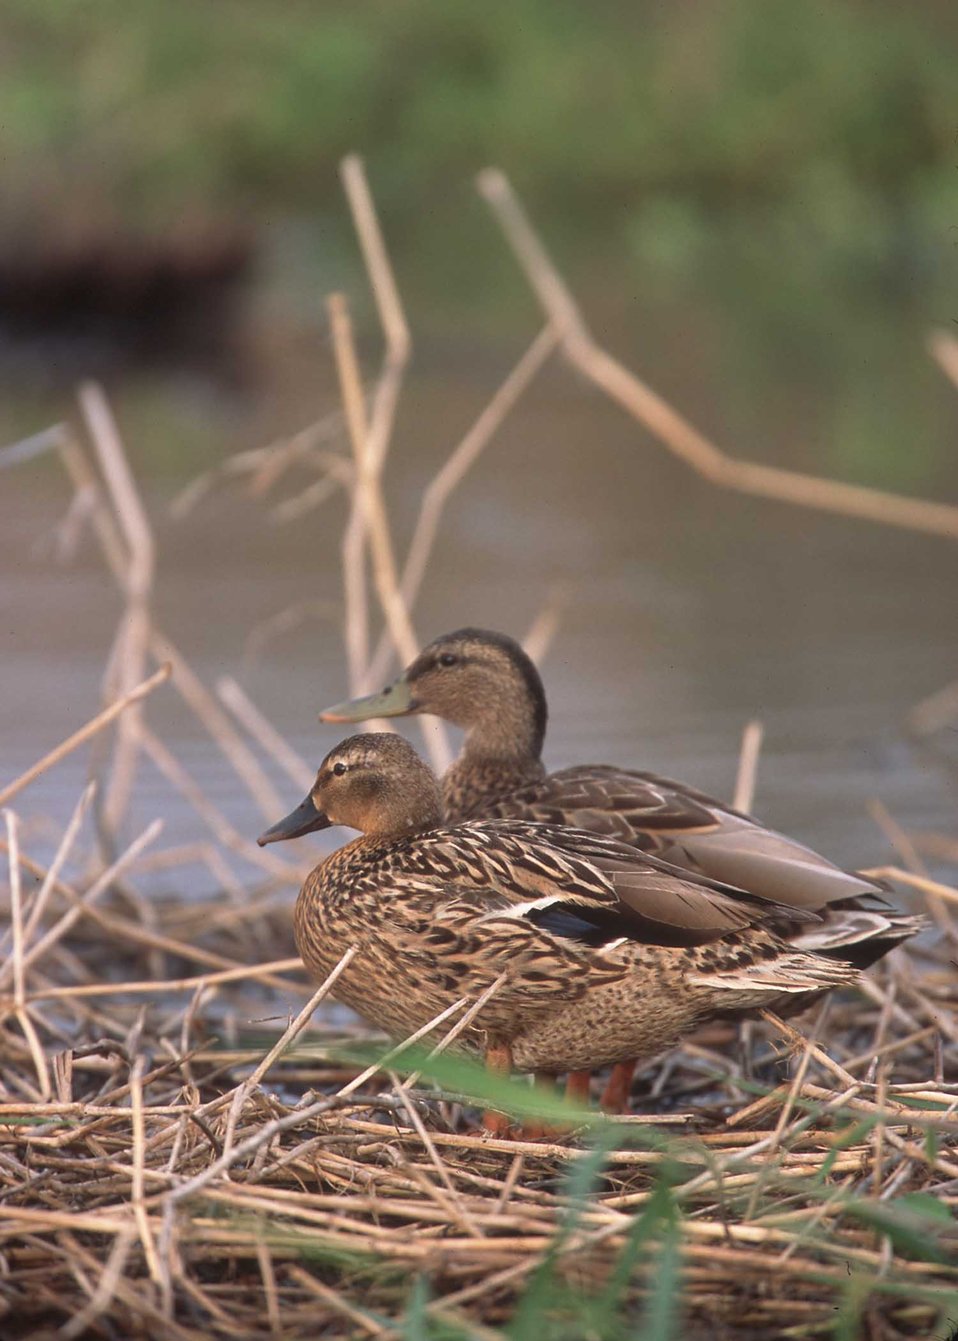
Hawaiin Duck - Koloa.